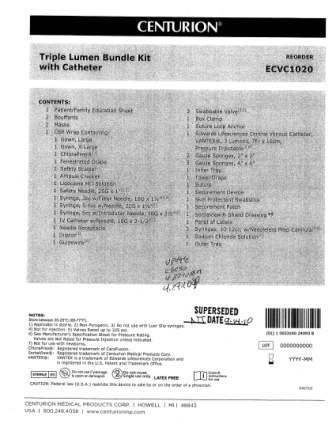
RECALLED - Convenience kits which contain bacteriostatic sodium chloride solution by American Regent

April 1, 2011 - Product Recall - Centurion Medical Products Initiates Voluntary Recall of Customized Convenience Kits (including select Central Venous Catheter, PICC Insertion, and VAD Trays) that contain American Regent’s Bacteriostatic Sodium Chloride Injection, USP, 0.9% 30 mL Multiple Dose Vials.